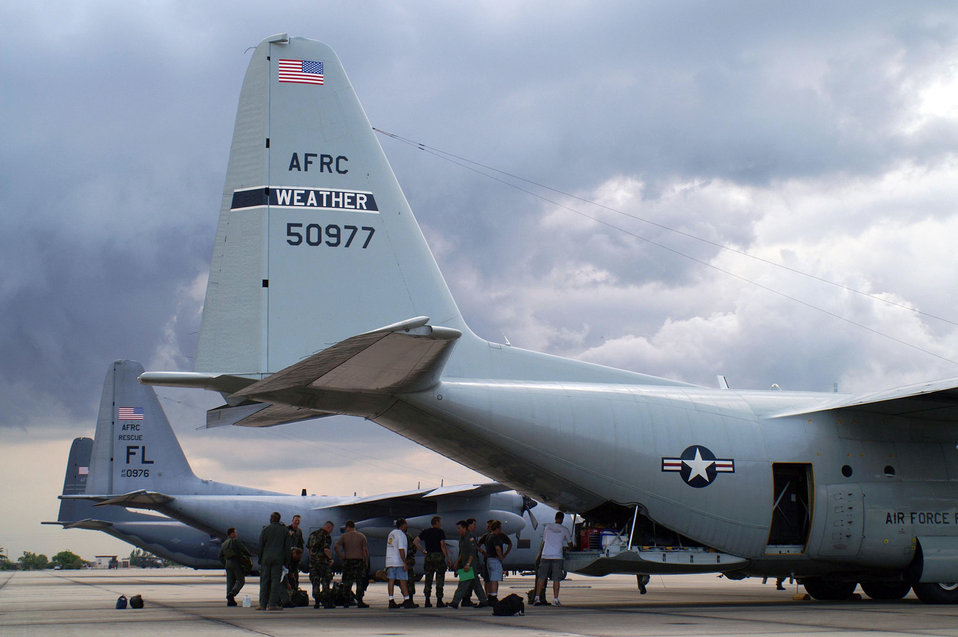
AFRC flies missions to storm-ravaged areas

PATRICK AIR FORCE BASE, Fla. -- Rescue crews and support people from the 920th Rescue Wing load supplies and support material, including an all-terrain vehicle, onto an HC-130 P/N aircraft here Aug. 30. A team of 50 unit reservists expect to be deployed for a week, living off of supplies they carry with them.